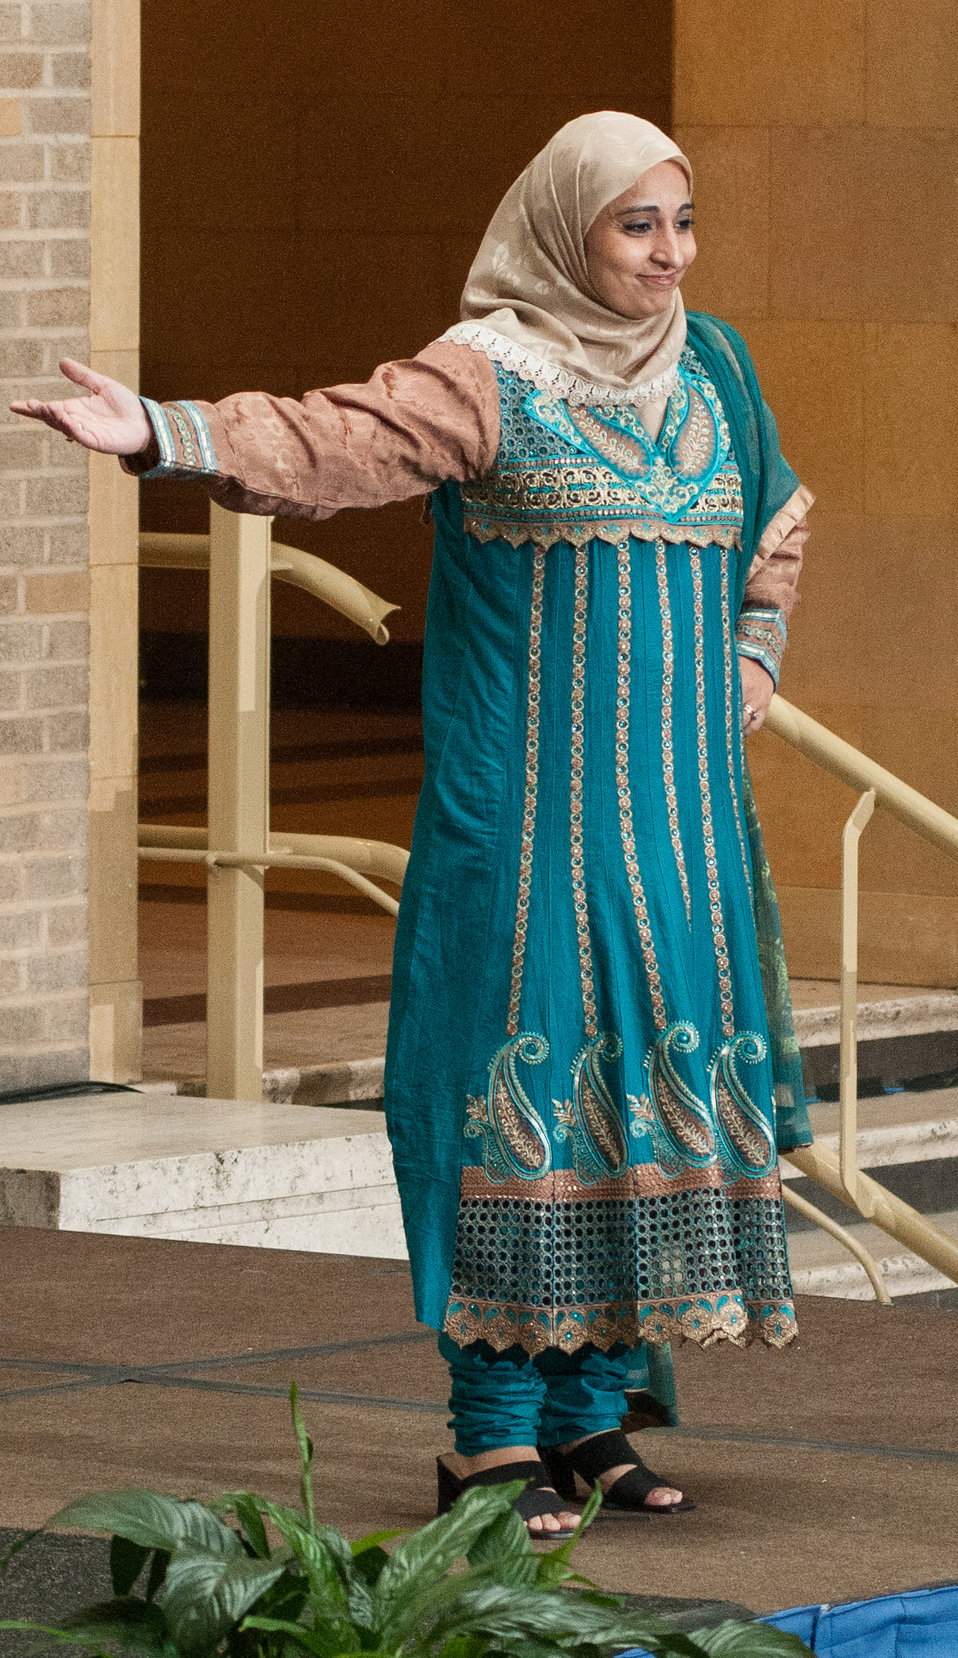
Traditional clothing from various Asian countries were demonstrated during this show of clothing, part of the U.S. Department of Agriculture (USDA) Asian Pacific American Heritage Month Observance program, at the USDA headquarters, Whitten Building patio, in Washington, D.C., on Thursday, May 23, 2013. This year’s theme is “Building leadership; Embracing the Cultural Values and Inclusions.”